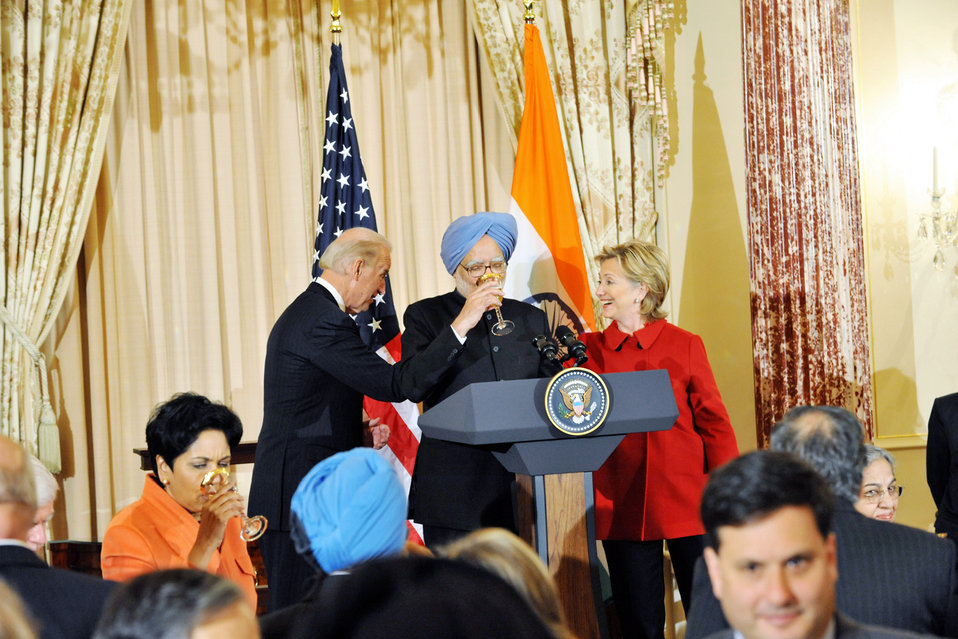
Vice-President Biden, Secretary Clinton Co-Host Social Lunch in Honor of Indian Prime Minister

U.S. Vice-President Joe Biden Dr. Jill Biden co-host a social lunch with U.S. Secretary of State Hillary Rodham Clinton in honor of Indian Prime Minister H.E. Dr. Manmohan Singh and Dr. Gurusharan Kaur at the U.S. Department of State in Washington, DC November 24, 2009.